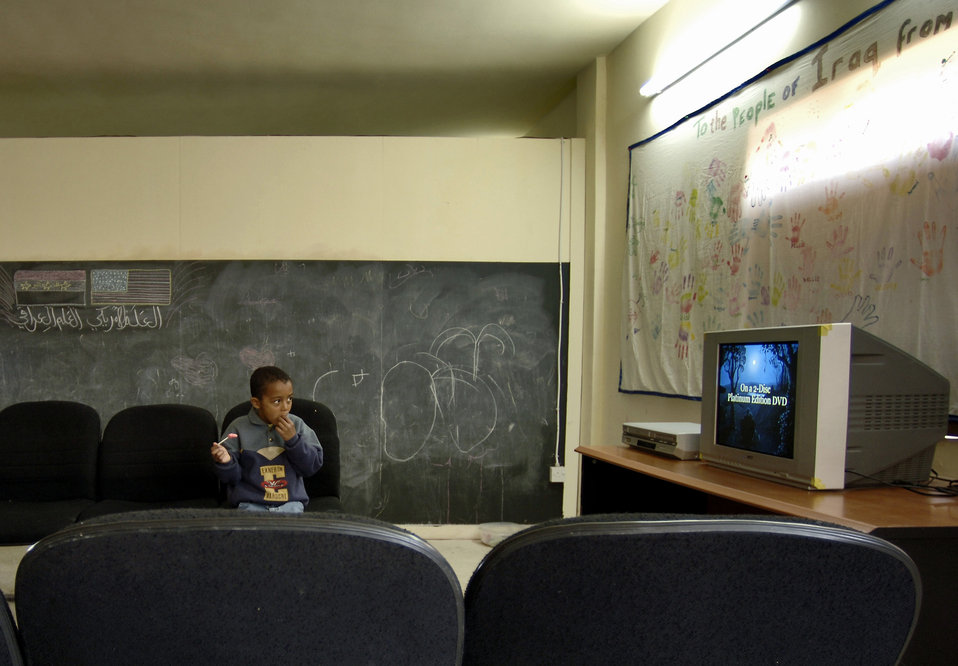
Medics, volunteers meet Iraqis' medical needs

An animated TV program entertains an Iraqi boy while he waits to be seen at the Radhwaniya Medical Clinic Outreach Program. Several times a week volunteers meet at the facility on the edge of the Baghdad International Airport area and support the medical needs of civilians.